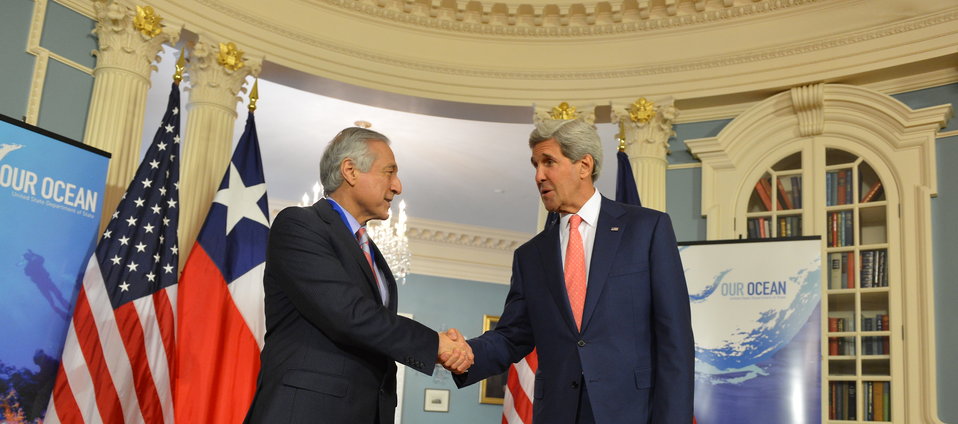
Secretary Kerry Shakes Hands With Chilean Foreign Minister Heraldo Munoz

U.S. Secretary of State John Kerry shakes hands with Chilean Foreign Minister Heraldo Munoz at the U.S. Department of State in Washington, D.C. on June 16, 2014.